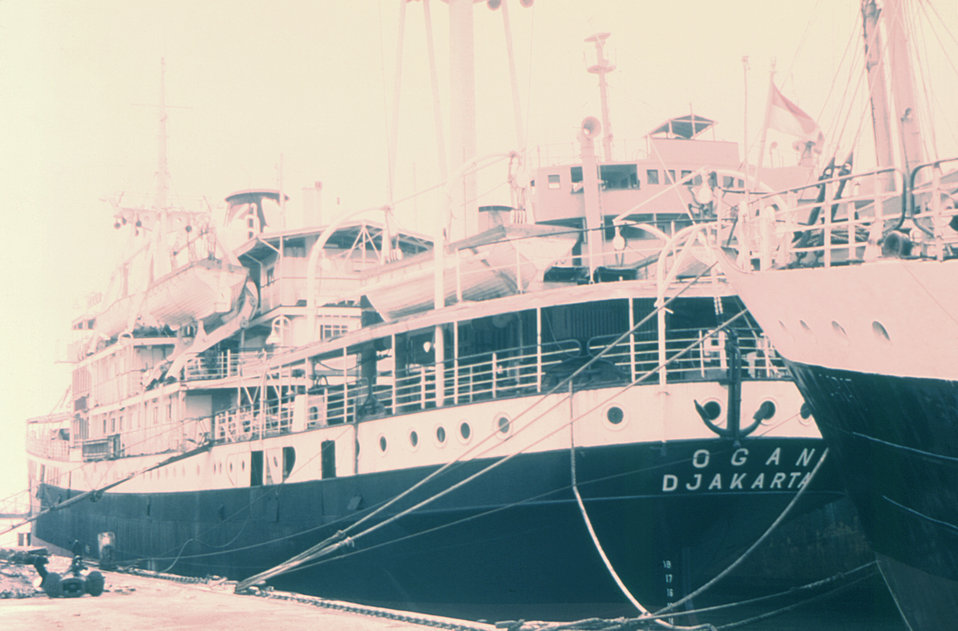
This 1969 image depicts two cargo ships that were docked in the Port of Jakarta, Indonesia.